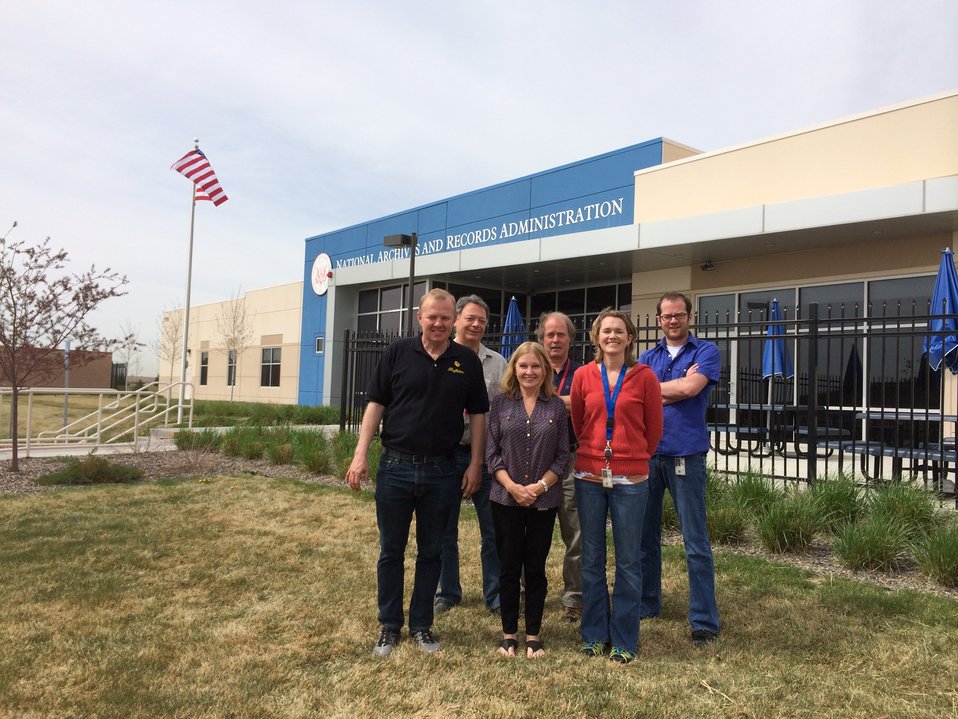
Staff of the National Archives at Denver for Archivist Award Ceremony: (r to l) Cody White, Marene Baker, Eric Bittner, Eileen Bolger, Rick Martinez, Ed Wilson; Location: National Archives at Denver, Broomfield, CO